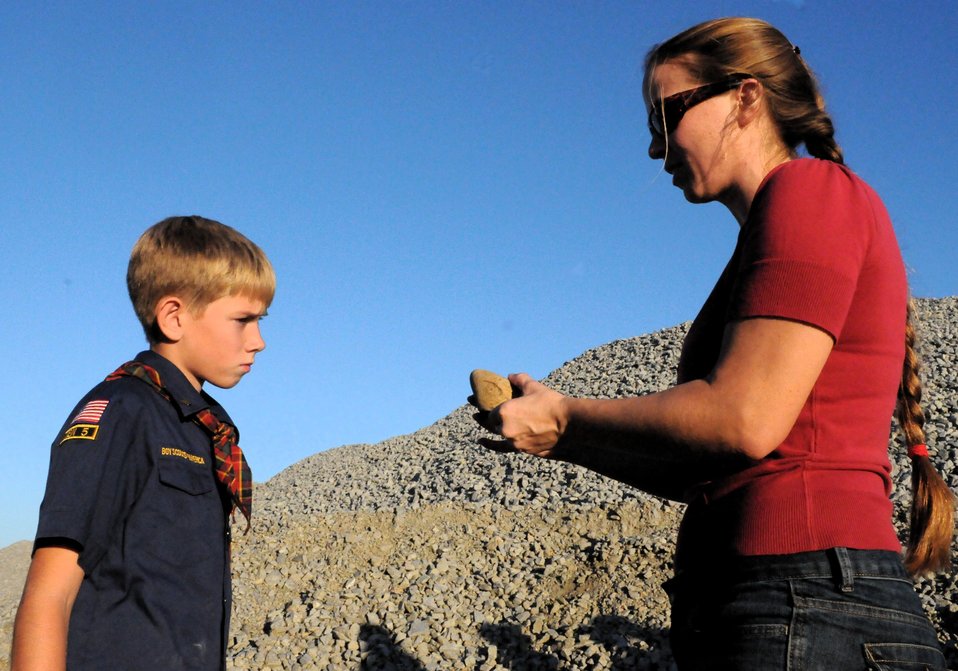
Cub Scouts Earn Geology Badge

Geologist Coralie Wilhite, of the U.S. Army Corps of Engineers Sacramento District, describes the minerals in a sample of granodiorite to Cub Scout Ben McGraw of El Dorado Hills, Calif., during a visit to Folsom Lake Dike 7 in Folsom, Calif., Nov. 8, 2012. Wilhite helped McGraw’s Cub Scout Pack 465 earn a geology merit badge with a geology lesson at the Folsom Dam auxiliary spillway construction site. The spillway project is a joint effort of the U.S. Army Corps of Engineers, the U.S. Bureau of Reclamation, and state and local partners to reduce flood risk throughout the Sacramento region.